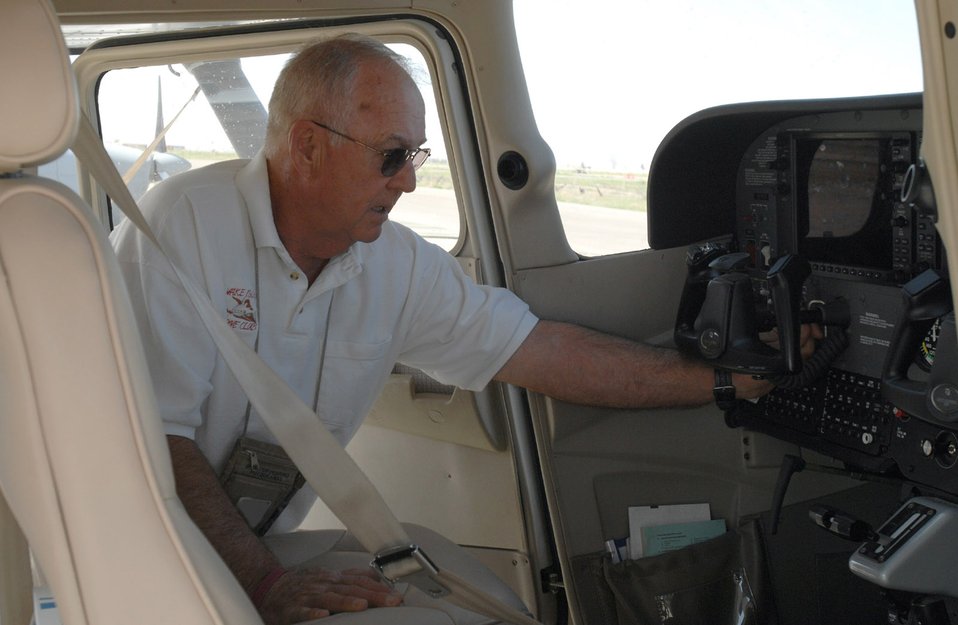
Retired Vietnam pilot supports war in Iraq

Retired Army Lt. Col. Lott Lawson inspects a Cessna 172 aircraft March 29 Kirkuk Air Base, Iraq. He is a site manager for the maintainence of Iraqi air force aircraft. As coalition forces continue reaching benchmarks to rebuild the Iraqi air force, this former U.S. Army helicopter has helped foreign pilots earn their wings throughout his military and civilian career during training programs in Vietnam, Saudi Arabia and Afghanistan.